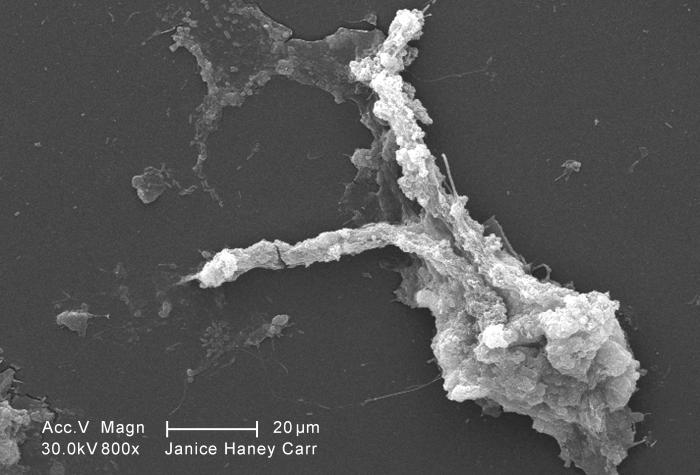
This scanning electron micrograph (SEM) of an untreated water specimen extracted from a wild stream mainly used to control flooding during inclement weather, revealed the presence of unidentified organisms, which included bacteria, protozoa, and algae. In this particular image, an unidentified amorphous mucoidal biofilm was featured, which appeared to have enmeshed numbers of amoeboid organisms.